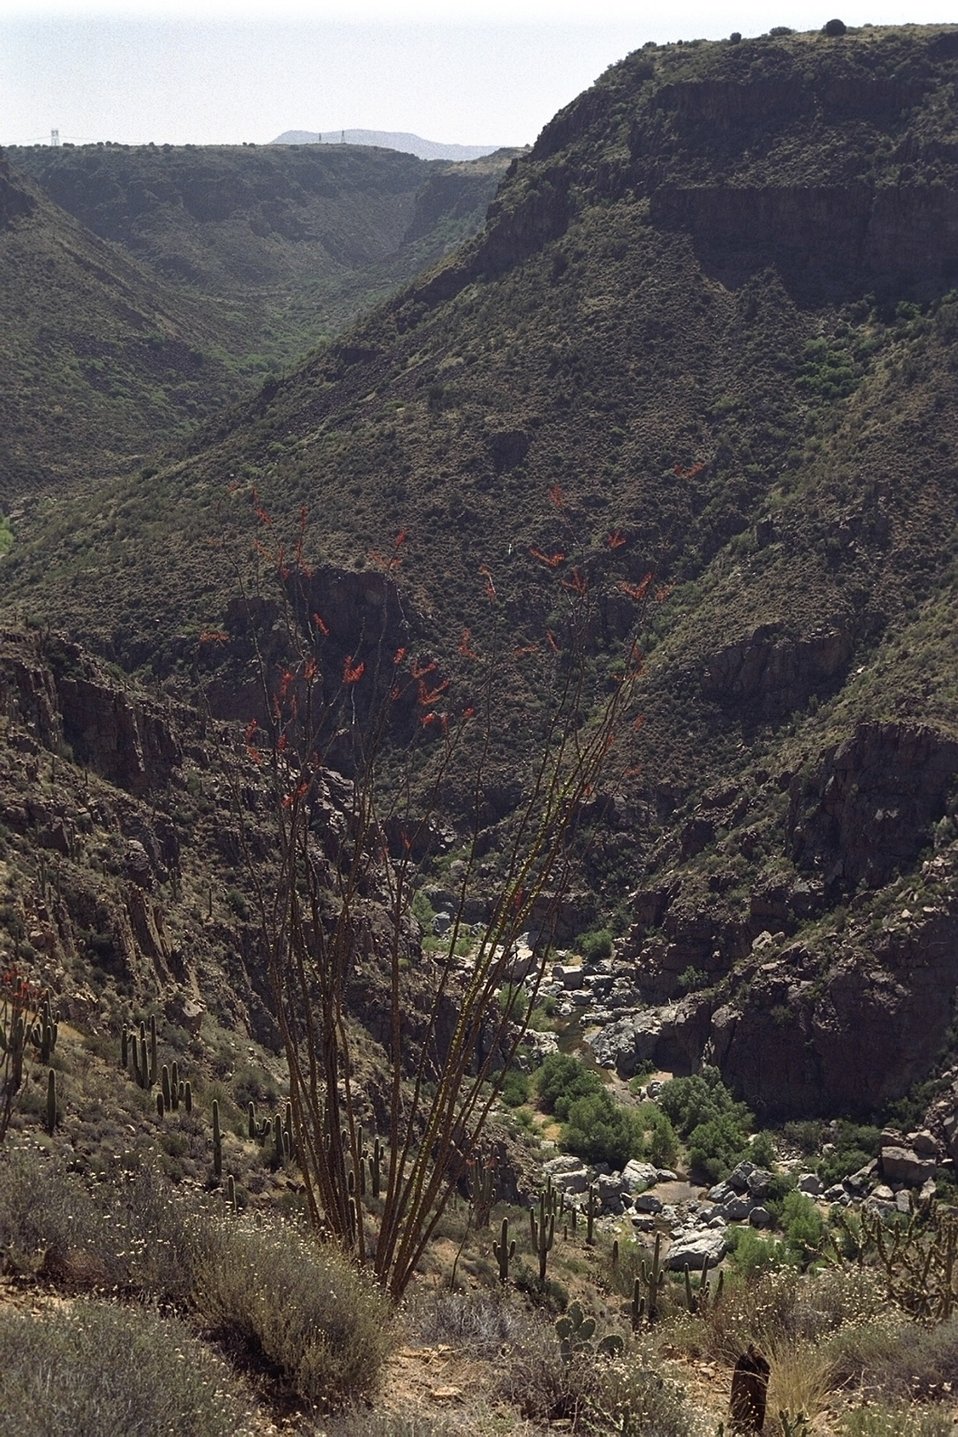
President Bill Clinton designated the Agua Fria National Monument in January of the year 2000.